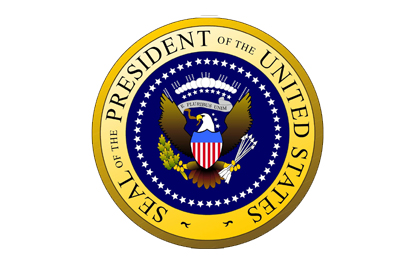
Air Force Birthday

Leaders send Air Force birthday greetings